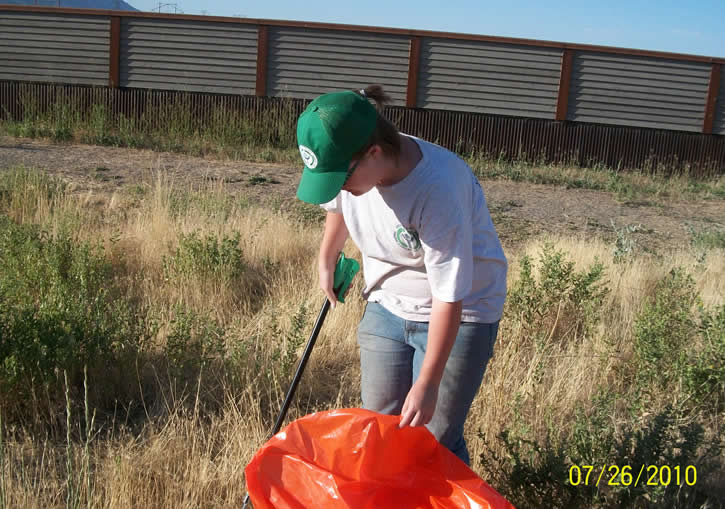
Picking up Litter

Youth Conservation Corps clean litter from the ground near maintenance shops and storage buildings.